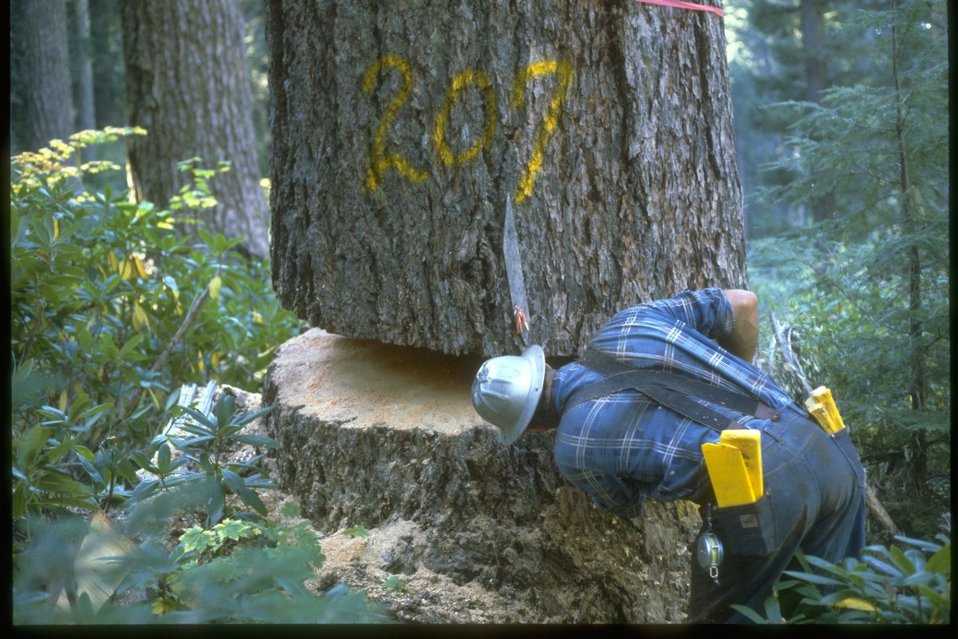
Big tree falling down.